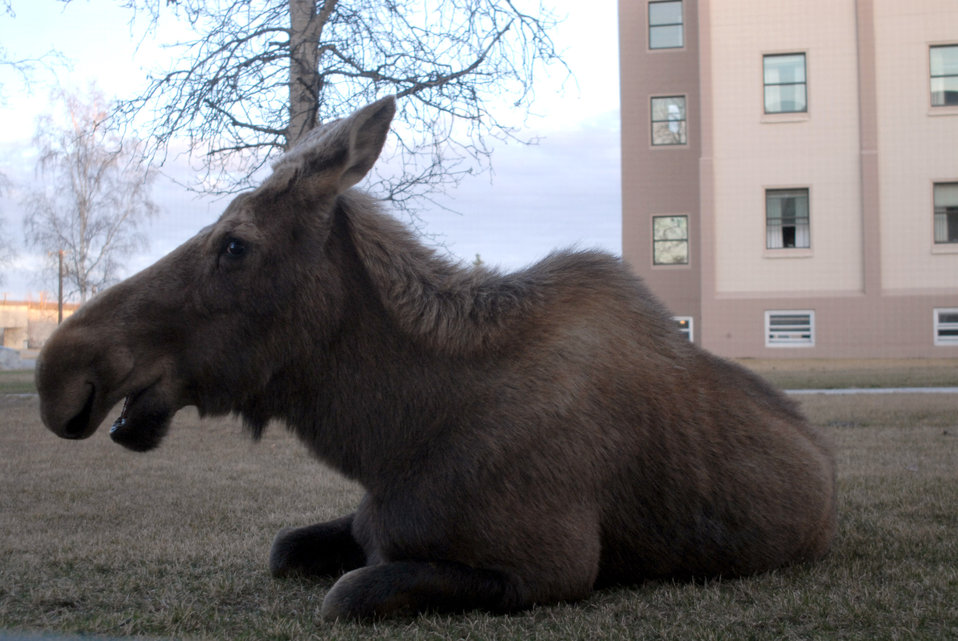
Alaskan Moose

An Alaskan Moose beds down beside a dormitory on April 29 at Eielson Air Force Base, Alaska. Moose are common sights during this time of year and special care must be taken not to get between a mother and her baby as she can turn very violent.